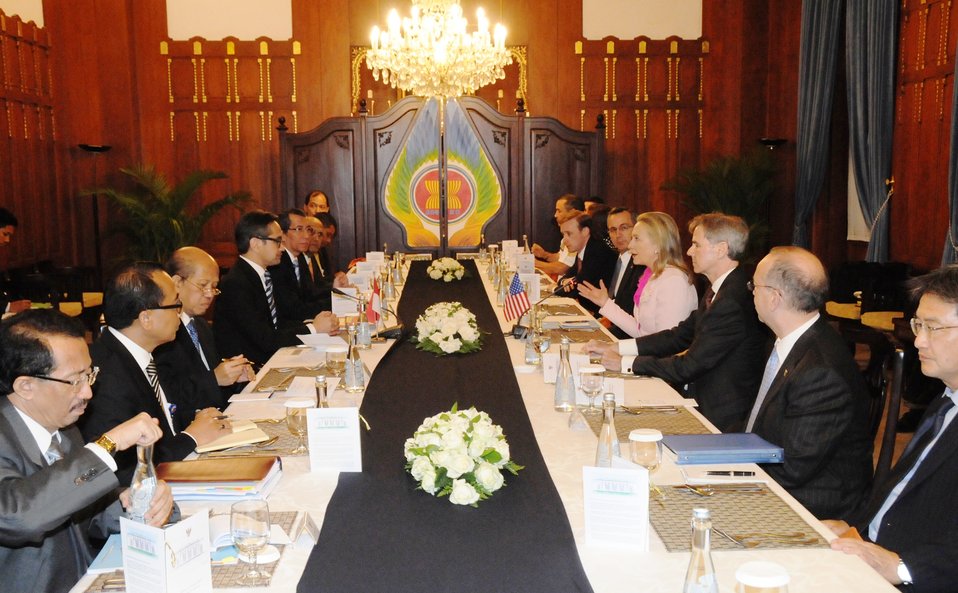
Secretary Clinton Meets With Senior Officials in Indonesia

U.S. Secretary of State Hillary Rodham Clinton meets with senior officials in Jakarta, Indonesia, September 3, 2012.